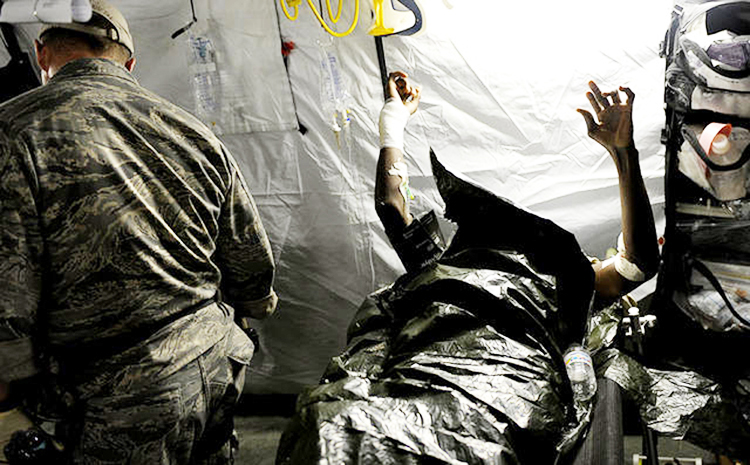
Operation Unified Response

A medical technician from Air Force Special Operations Command checks on Haitian patients in a field clinic Jan. 16, 2010, in Port au Prince, Haiti.